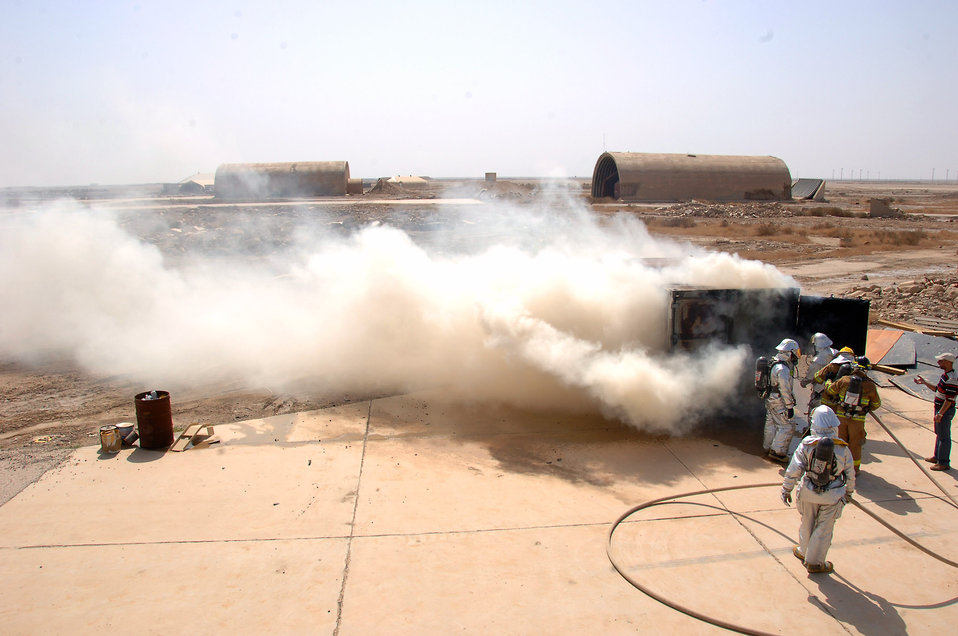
Airmen train Iraqis to save lives

Air Force firefighters from the 407th Expeditionary Civil Engineer Squadron finish up one round of a